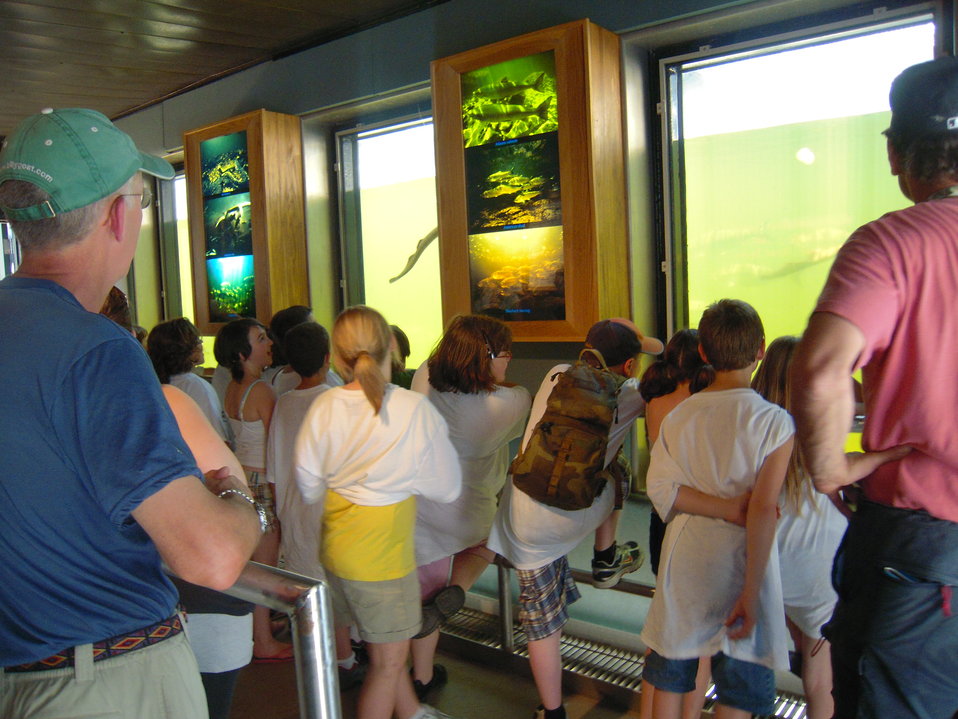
Looking at American shad from viewing room